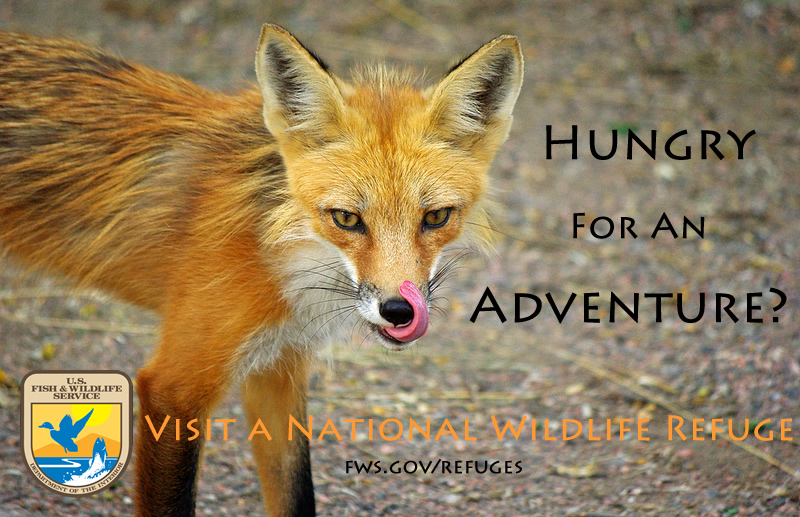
Hungry for an Adventure?